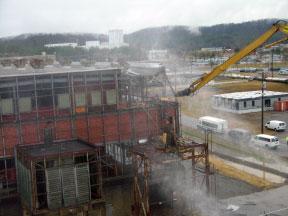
K-25 demolition

With 44 acres under one roof, demolition is now underway at the Oak Ridge K-25 Building, located in the state of Tennessee. The building will be completely demolished with all waste disposed by the end of 2011.